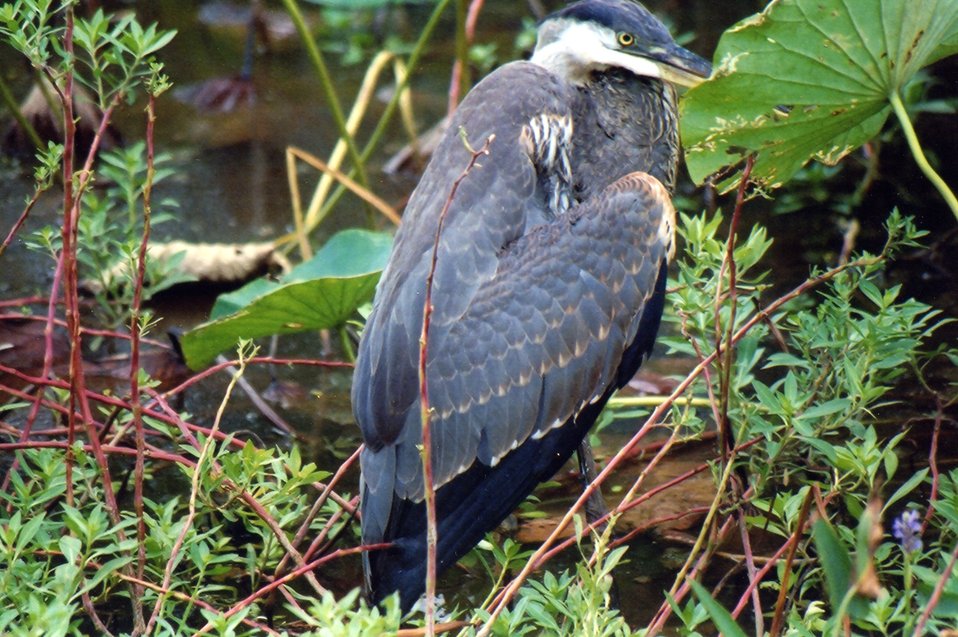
Juvenile great blue heron (?) sitting in a roadside marsh.